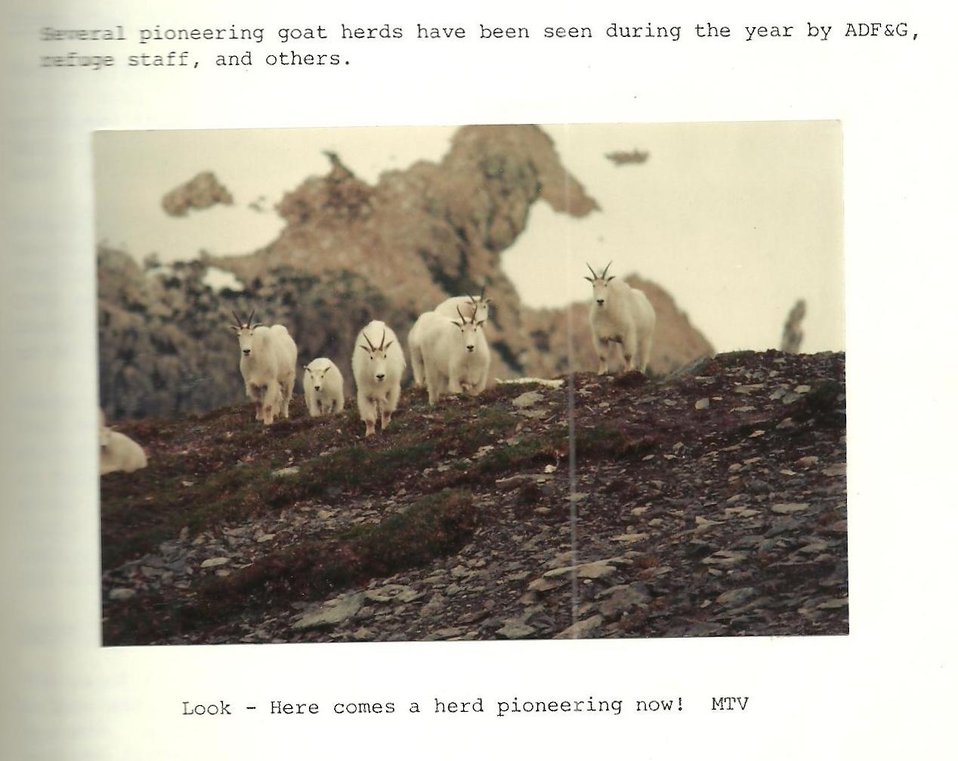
(1981) Pioneering Herd

Credit: USFWS

Source and Contact: Kodiak National Wildlife Refuge